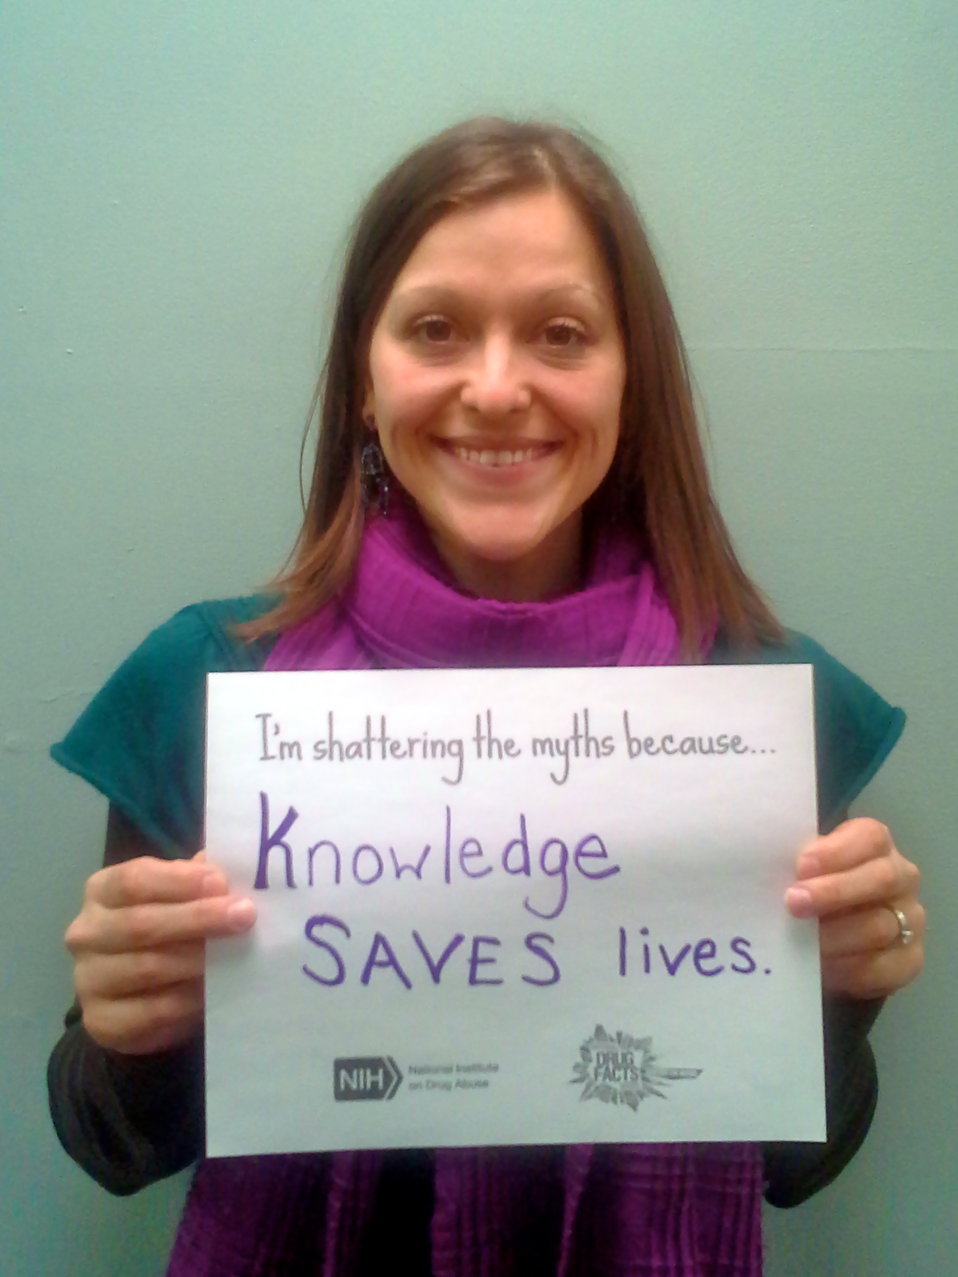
Shattering the Myths campaign in Winona, Minnesota